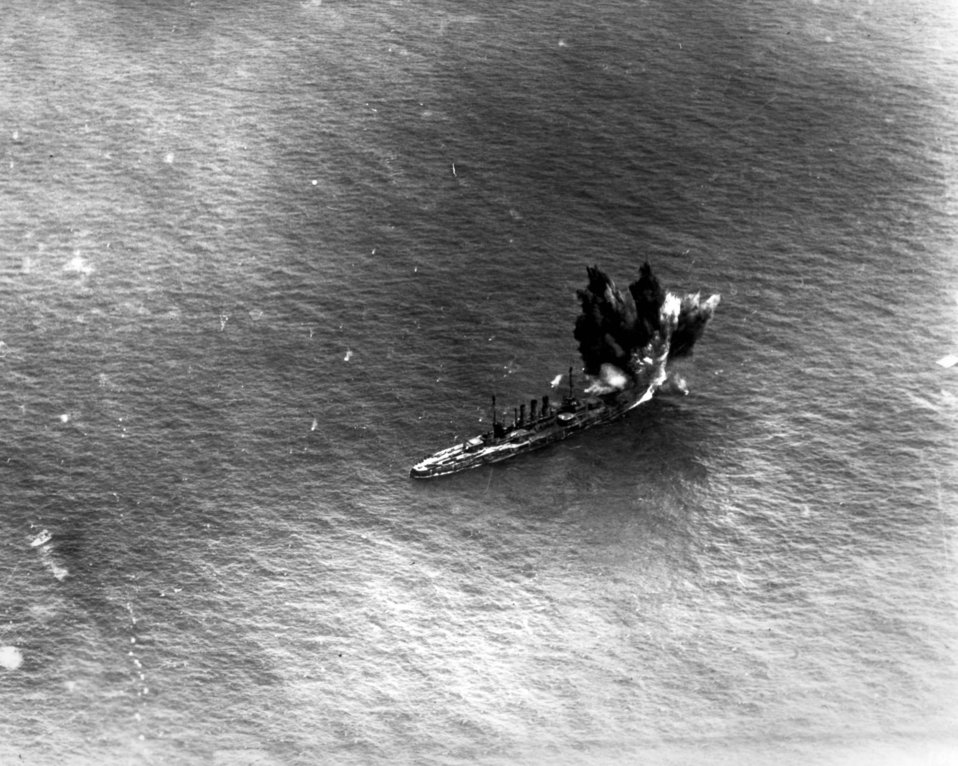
Bombing of the Ostfriesland

Used as a target ship for bombing attacks near Cape Henry, Va., the Ostfriesland was sunk by bombs July 21, 1921. Brig. Gen. Billy Mitchell, an outspoken supporter of air power, waged a war throughout his career against his superiors who believed that the airplane was better suited for observation. As head of aviation in the Army Signal Corps during World War I, Mitchell felt otherwise--he knew the power of aviation for the military. Finally, in 1921, he persuaded the Army and the Navy to allow him to demonstrate the capabilities of the airplane by attempting to sink captured German warships.